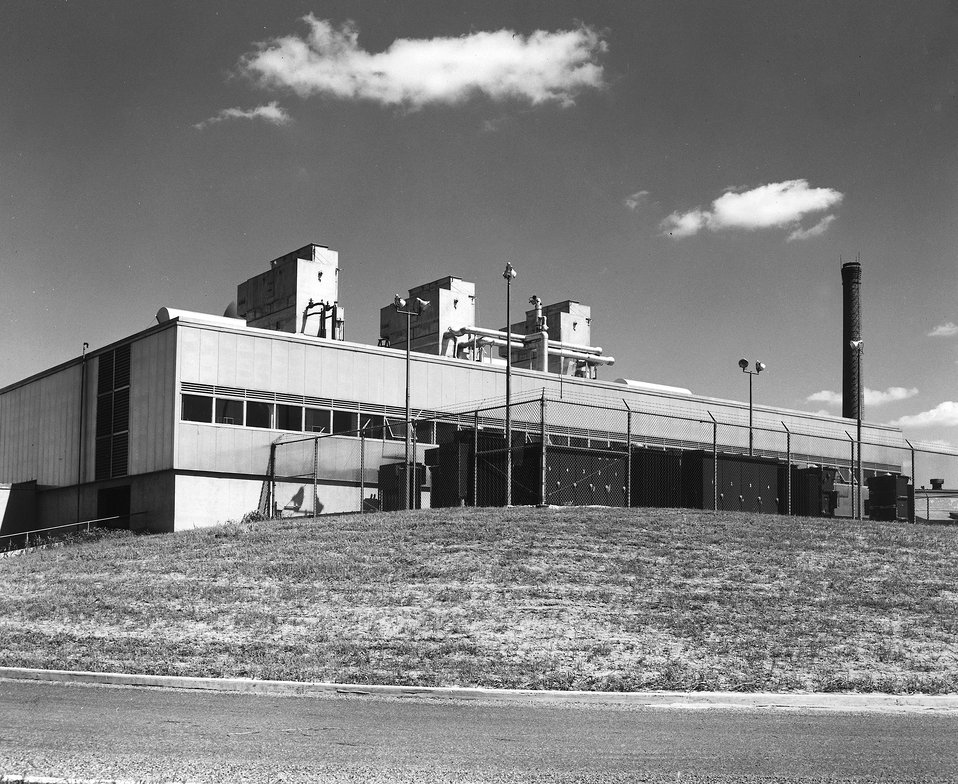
A general view of the sub-station at the west end of Building 902. The units on top of the building are part of the water cooling system. c. 1951